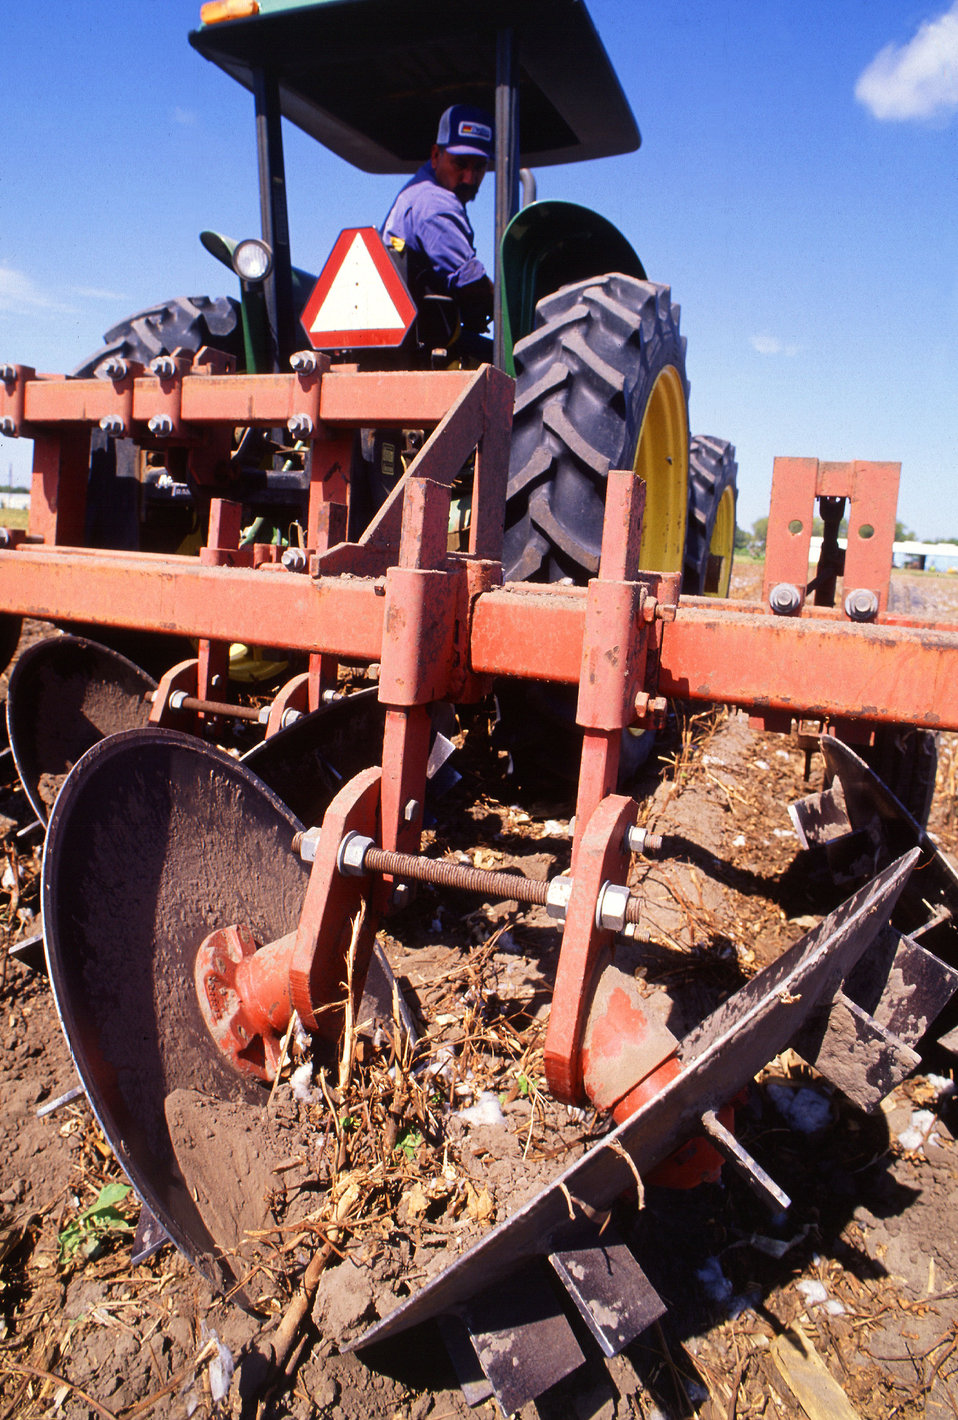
U.S. Department of Agriculture (USDA) Agricultural Research Service (ARS) field technician Emilio Chavez drives a tractor-drawn stalk puller that uproots plants after harvest. This prevents regrowth, water loss, and overwintering of pests in cotton and grain sorghum fields.